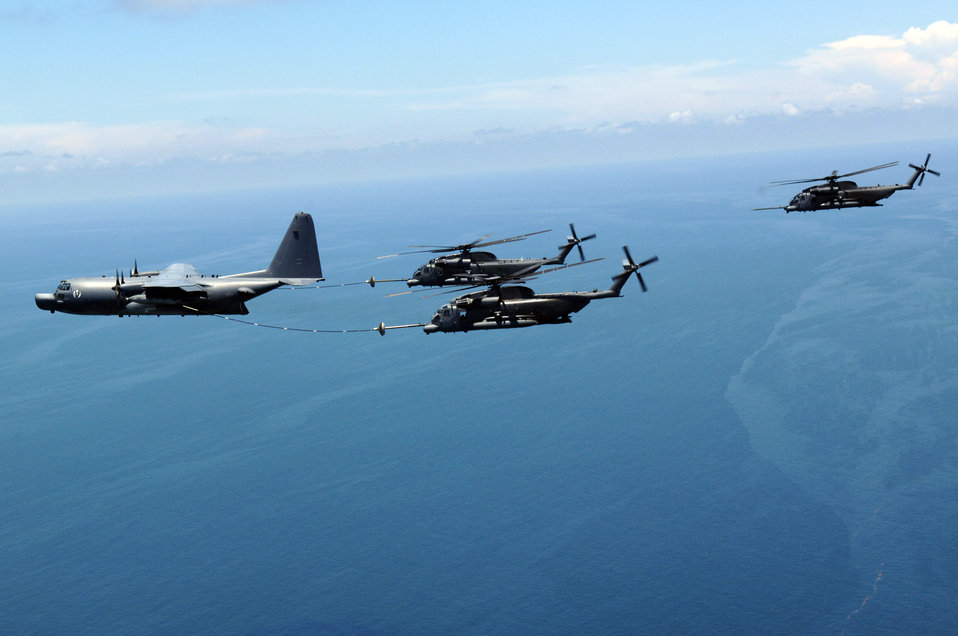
Fly high, pave low

MH-53 Pave Low helicopters from the 20th Special Operations Squadron at Hurlburt Field, Fla., fly over a live-fire range June 12 at Eglin Air Force Base, Fla. The interactive defensive avionics system greatly enhances the defensive capabilities of the Pave Low, providing a new level of detection avoidance with near real-time threat broadcasts over-the-horizon, so crews can avoid and defeat threats, and replan en route if needed.